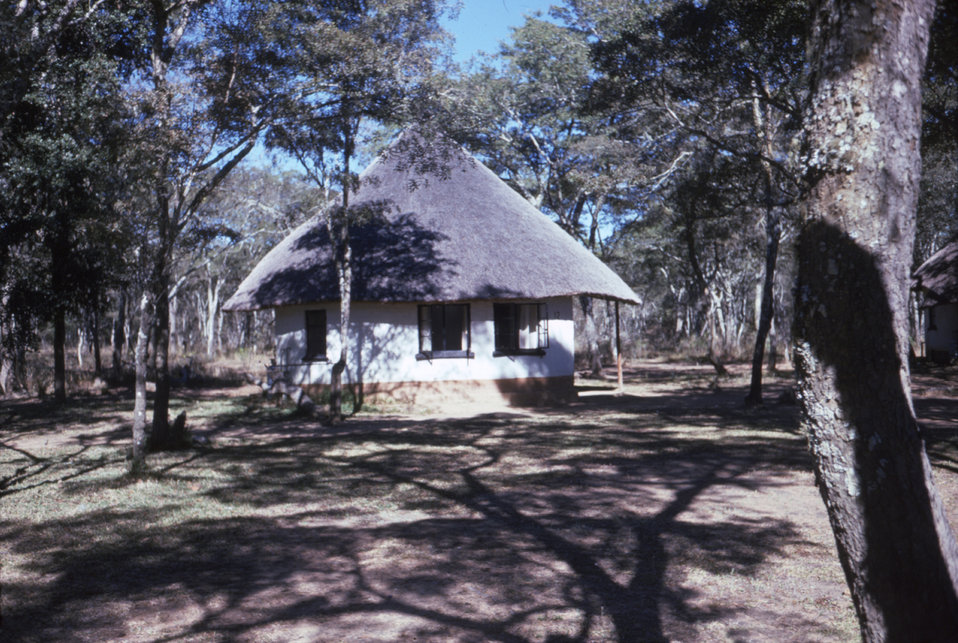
This photograph of a Victoria Falls' rondaval, was where public health officials stayed during the 1975 Rhodesian, (now Zimbabwe), Marburg investigation.